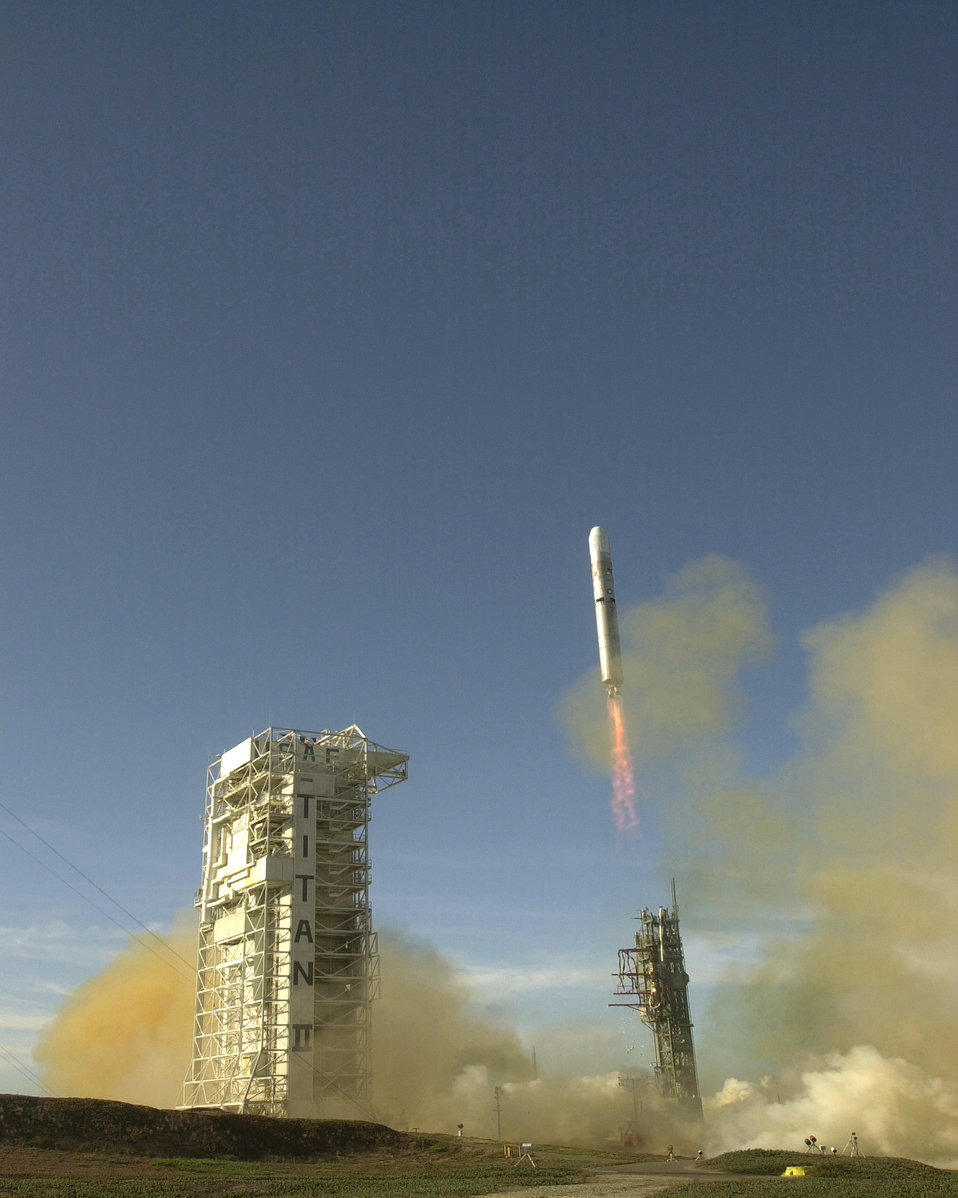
Titan II launched

VANDENBERG AIR FORCE BASE, Calif. -- The final Titan II rocket streaked skyward Oct. 18, leaving in its wake a 40-year history that included a transformation from intercontinental ballistic missile to space booster.